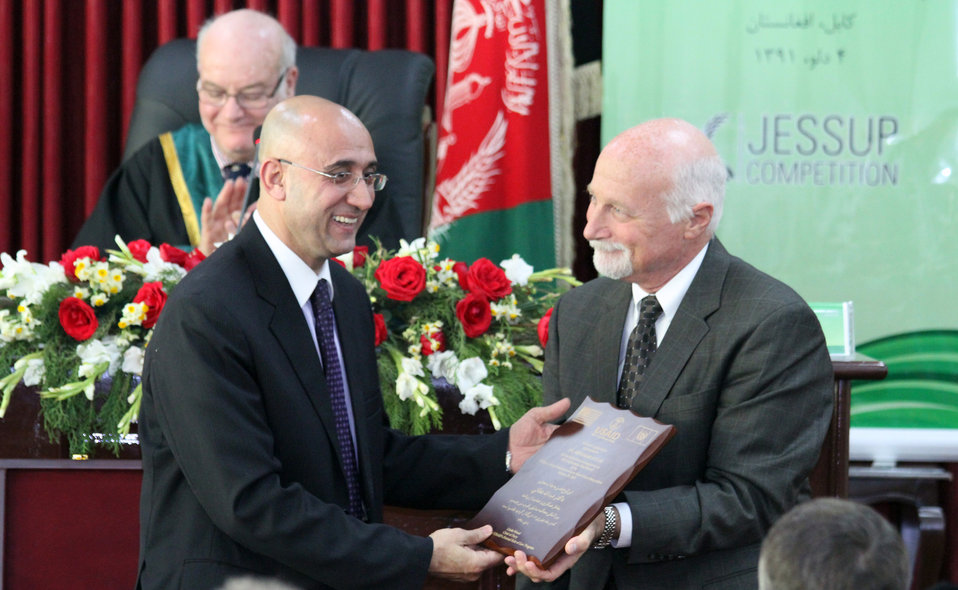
Afghanistan Final National Round of the 2013 Philip C.Jessup International Law Moot Court Competition